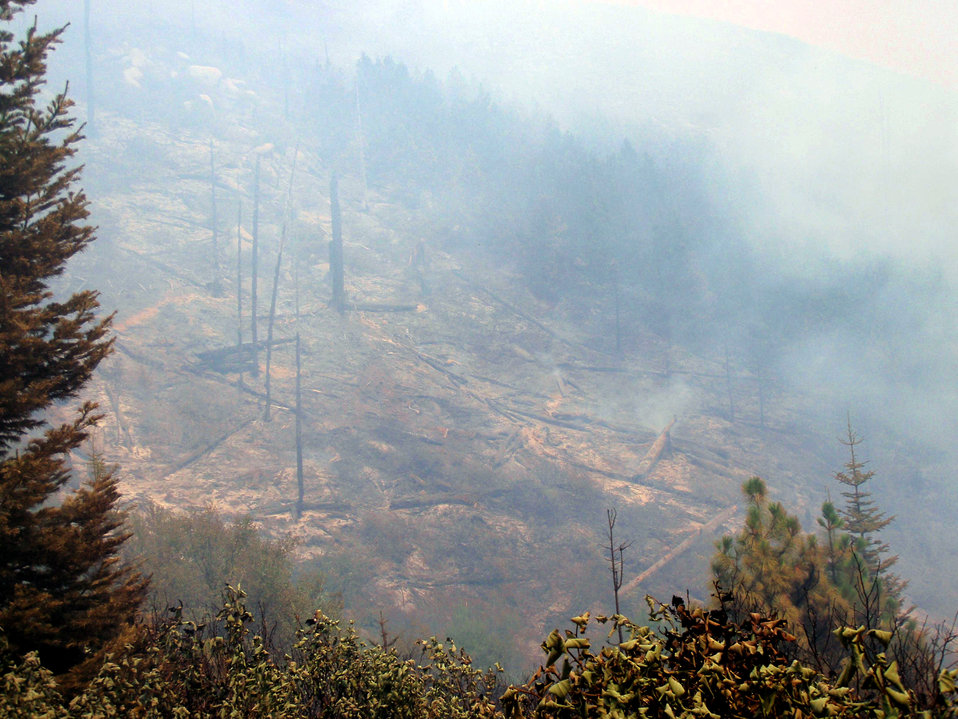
The burned and charred remains of the forest form the Salmon River Complex Fire. The Salmon River Complex Fire in the Klamath National Forest near Sawyers Bar, CA began on Jul. 31, 2013 was manmade has consumed approximately 9,005 acres and is 16% contained.